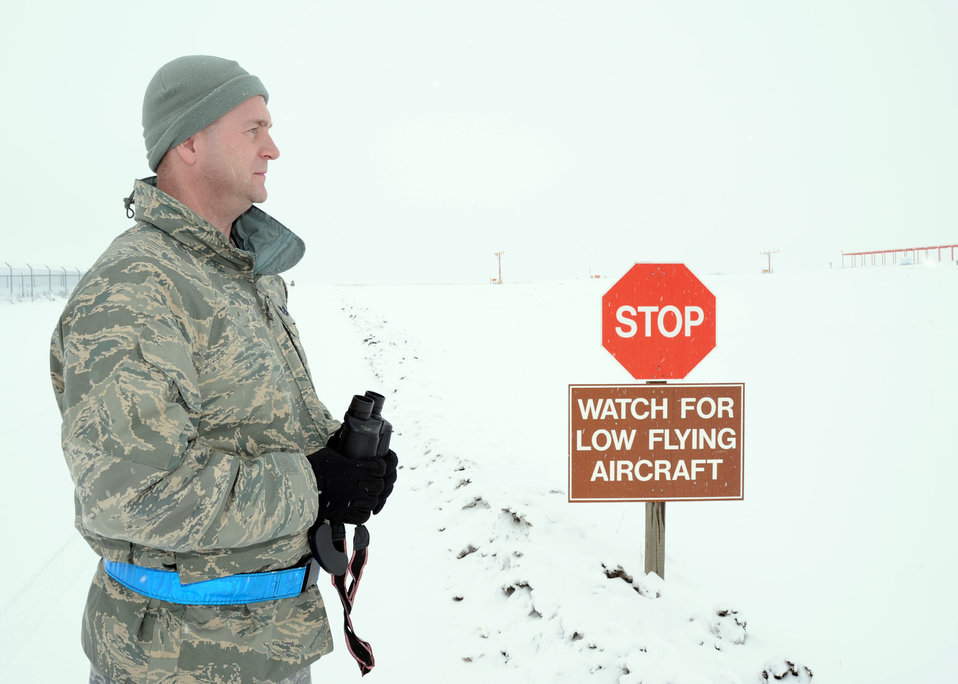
Safety team

Tech. Sgt. Joseph Pierce scans the horizon for potential wildlife Jan. 5, 2010, in the flightline area at Fairchild Air Force Base, Wash. Sergeant Pierce is the 92nd Air Refueling Wing flight safety superintendent. He is a member of the bird aircraft strike hazard program, which plays an important role in everyday airfield safety by ensuring the area is free of birds and other wildlife.